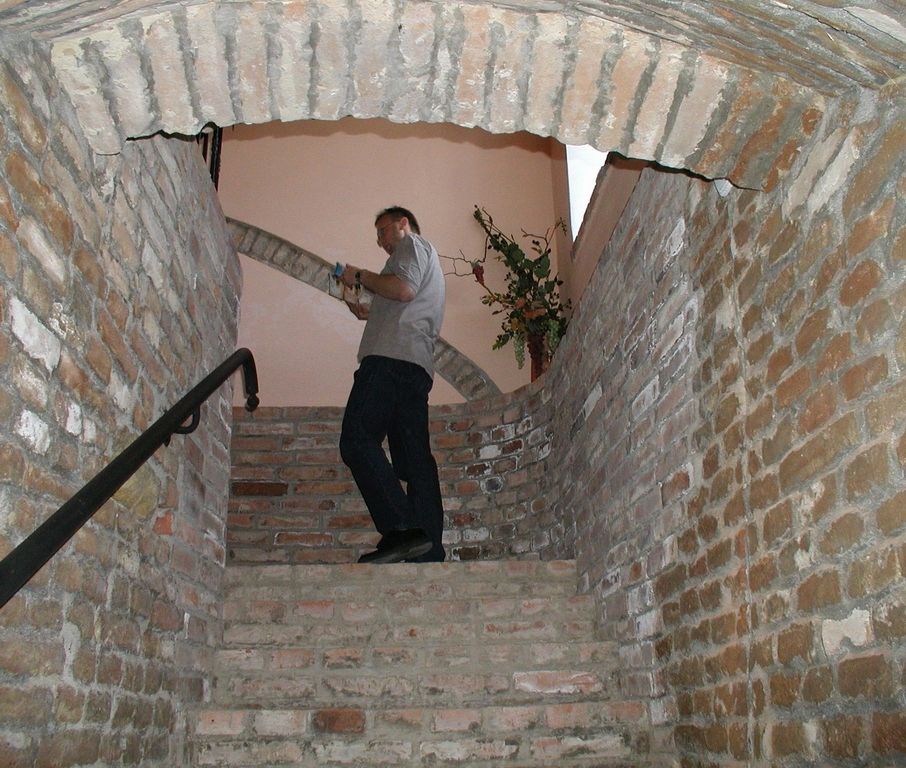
Vstup do pivnice Licencovanie: Autorom fotografie je Imrich Šimonek z Dubníka